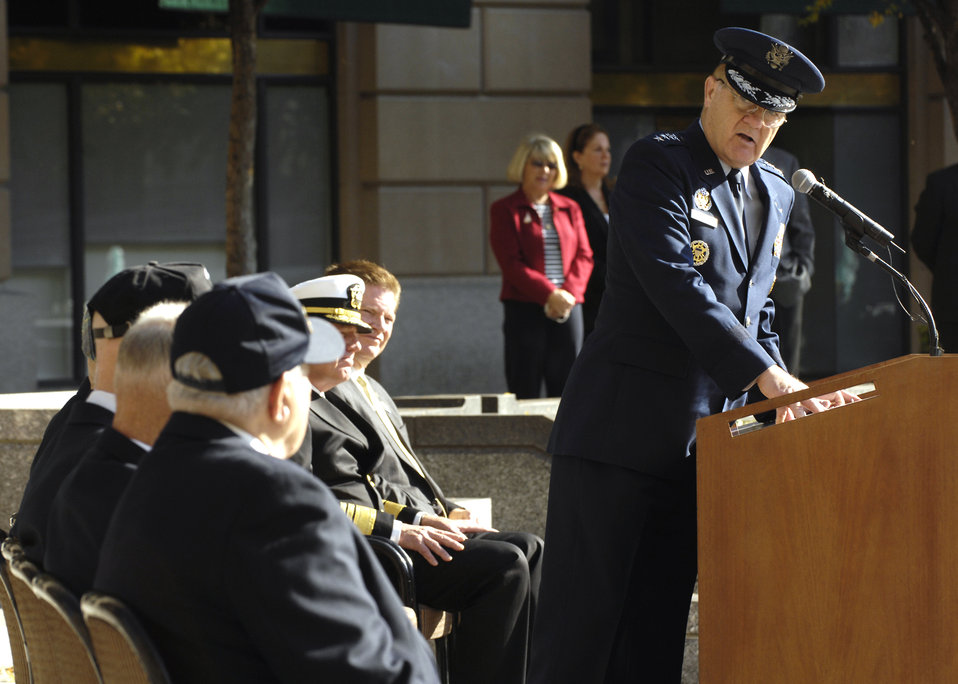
Doolittle Raiders visit Washington Airmen, memorials

Gen. Ronald E. Keys serves as host at the wreath laying ceremony in honor of the USS Hornet at the Navy Memorial in Washington Nov. 9. On April 18, 1942, the Doolittle Raiders, led by then Lt. Col. Jimmy Doolittle, became the first to bombard Japan following the attack on Pearl Harbor. The Doolittle Raiders have celebrated their victory for the past 64 years. General Keys is the commander Air Combat Command.